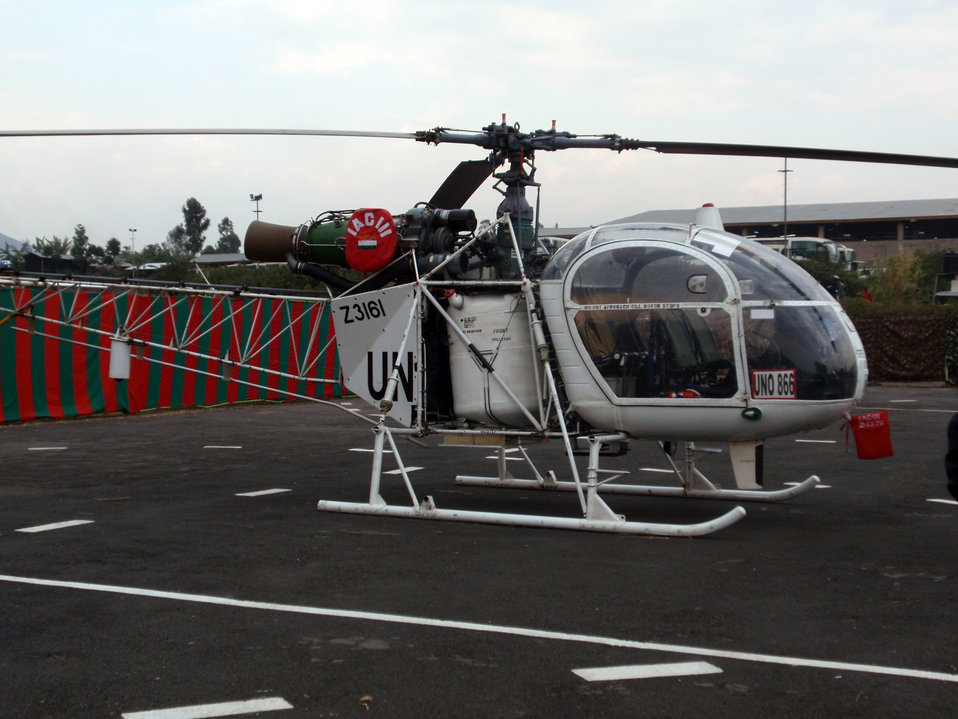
Behind the Scenes: Secretary Clinton Visits MONUC in Goma

The scene during U.S. Secretary of State Hillary Rodham Clinton's tour the United Nations Mission in the Democratic Republic of Congo (MONUC) air support operations base in Goma, Democratic Republic of Congo August 11, 2009.